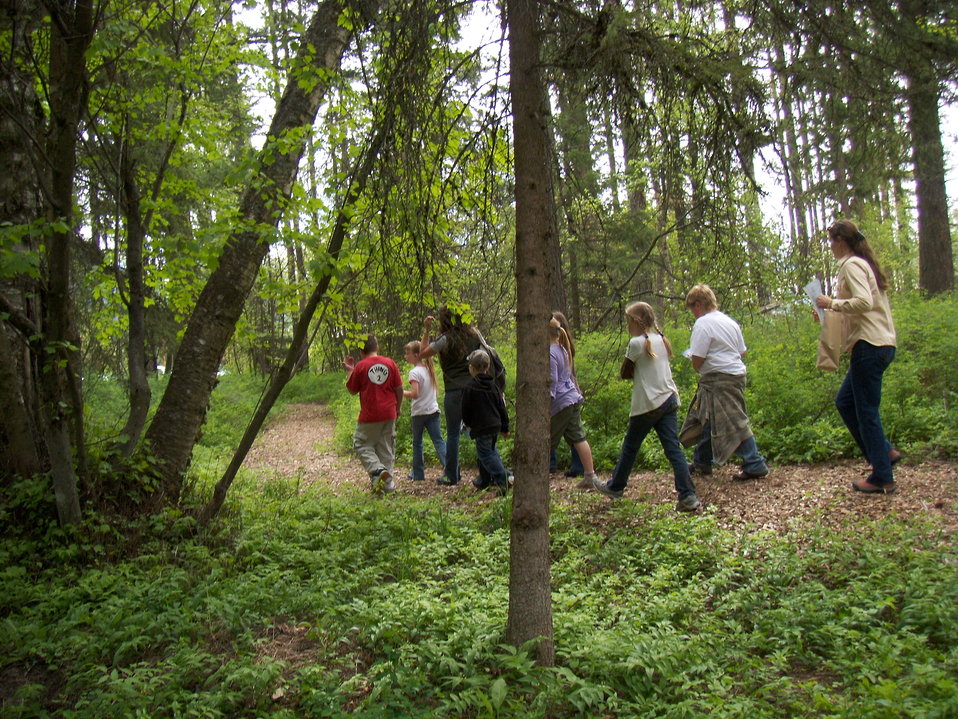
Local Schools use the Nature Trail at Creston National Fish Hatchery

Creston National Fish Hatchery's Nature Trail has thirteen signs along the trail that correspond to a brochure at the trailheads.

For Flathead Valley educators and families, this nature trail helps to increase knowledge of the natural world around us. Informational signs include: Wildflowers not Weeds, Why do Hacheries Raise Fish, Deer Trails - Natures's Highways, Habitats-Aquatic-Forest-Riparian, Protecting Water Quality, Pollinators, Birds - Can you Hear Them Sing?, Historical Land - Jessup, Leave no Trace, Do Insects Bug You?, and the Class Room by the Creek (amphitheater).